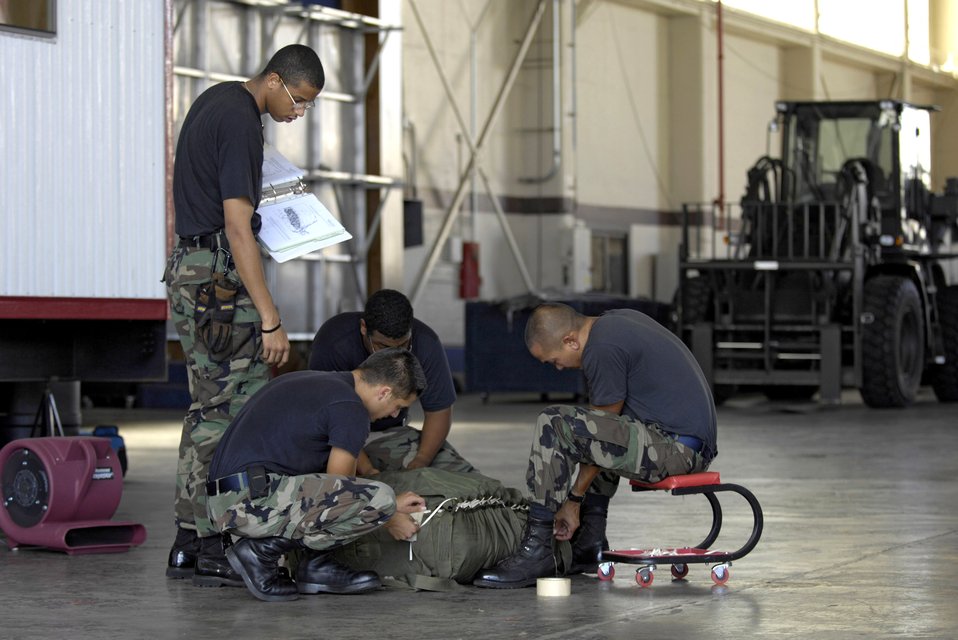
Chute riggers

Airman 1st Class Darrius Armstead watches over his team as they pack a parachute in a hangar at Hickam Air Force Base, Hawaii, June 11. They are preparing the parachute to be rigged to a practice airdrop bundle. The Airmen are from the 15th Logistics Readiness Squadron Combat Mobility Element.